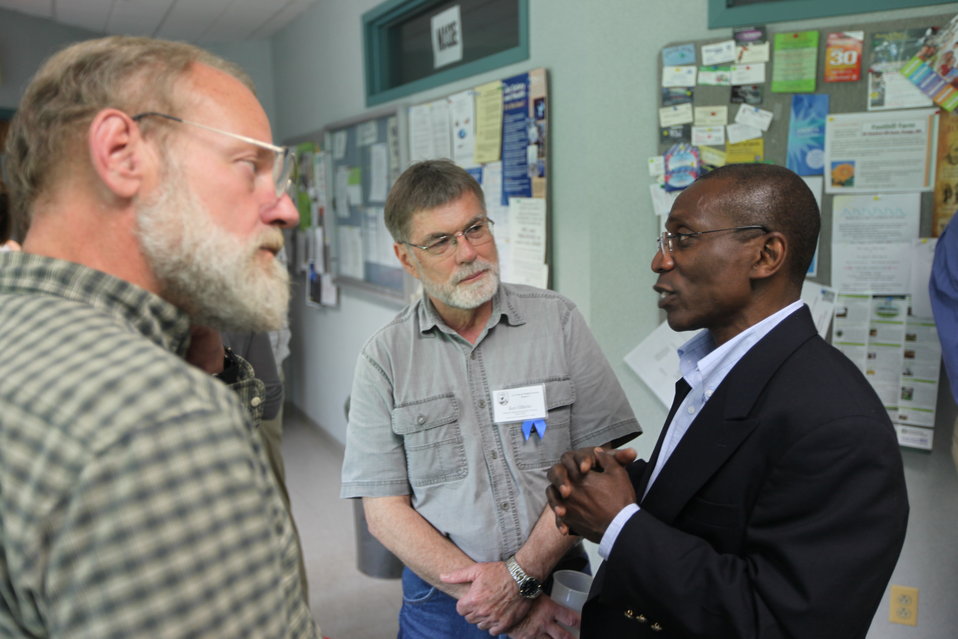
Northeast Region Employee Appreciation Awards

Before the awards ceremony, employees from the region catch up.